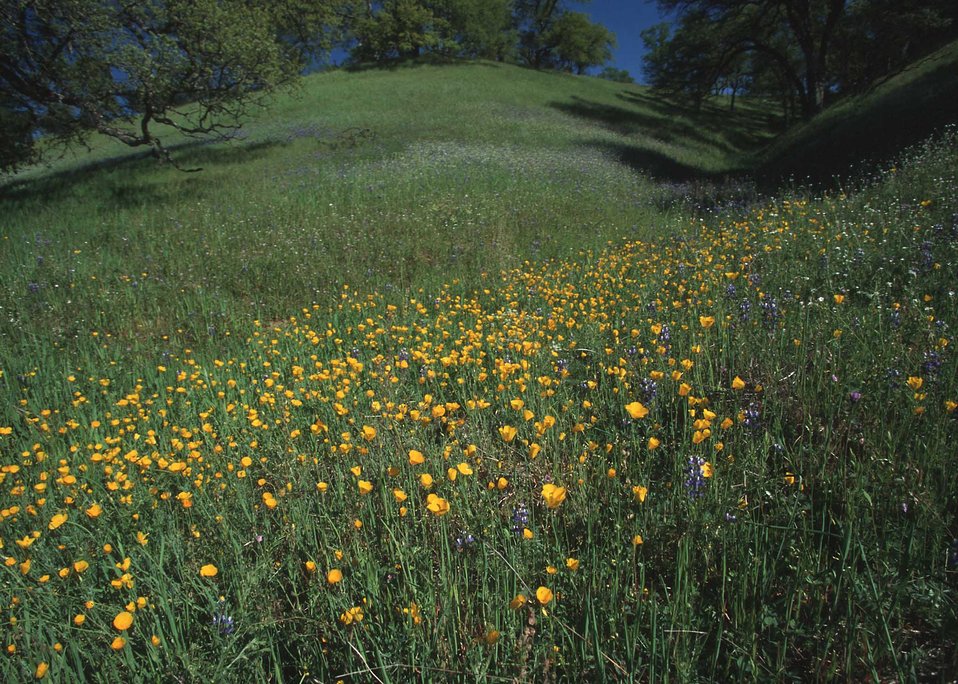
This hillside in northern California is covered by wildlfowers. This open space provides habitat to birds, wild turkey and other wildlife.